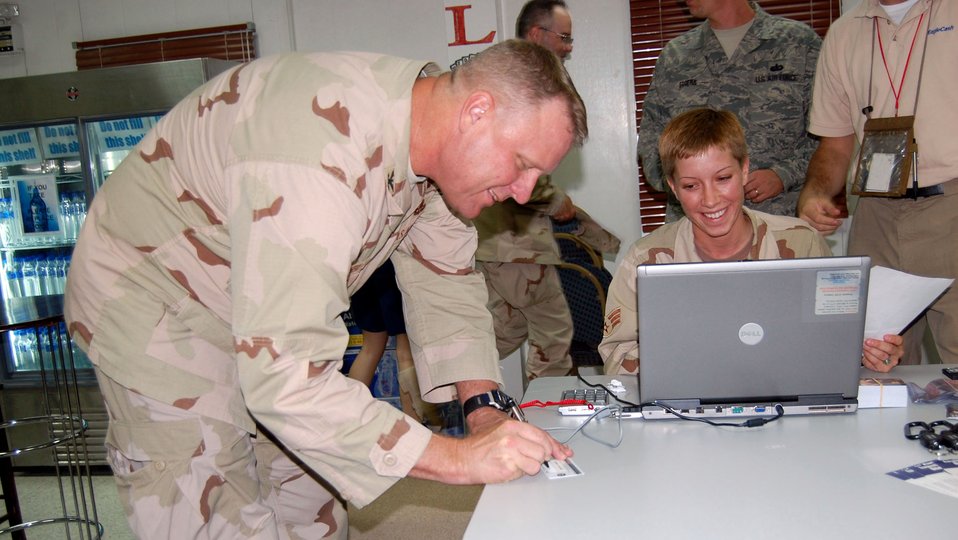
Eagle Cash card: Money spreads its wings

Col. Robert Swisher signs for his Eagle Cash card Sept. 11 at the Flex Recreation Center in Southwest Asia. Cardholders can use Eagle Cash cards even when local ATMs are down or if the base exchange credit or debit lines are down. Colonel Swisher is the 386th Air Expeditionary Wing commander.